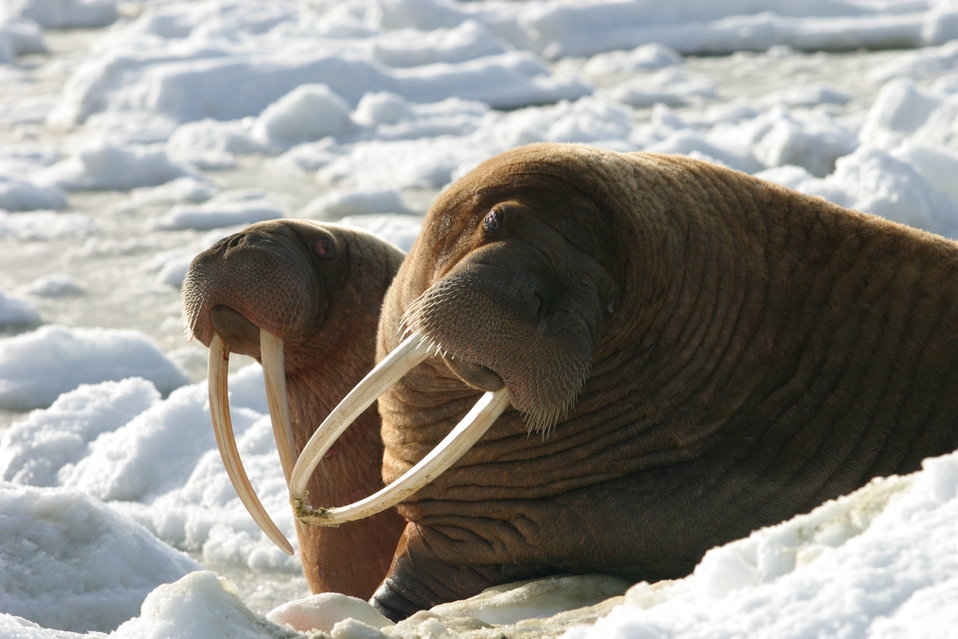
Walrus Cows

Two walrus cows warily eye the photographer.